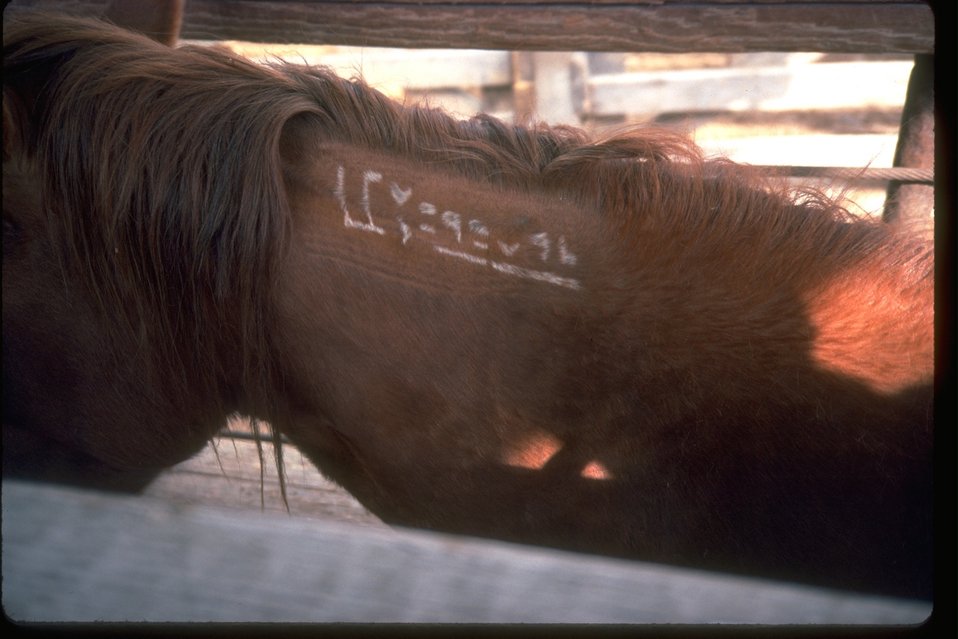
Freezemark on neck of wild horse provides unique identification.